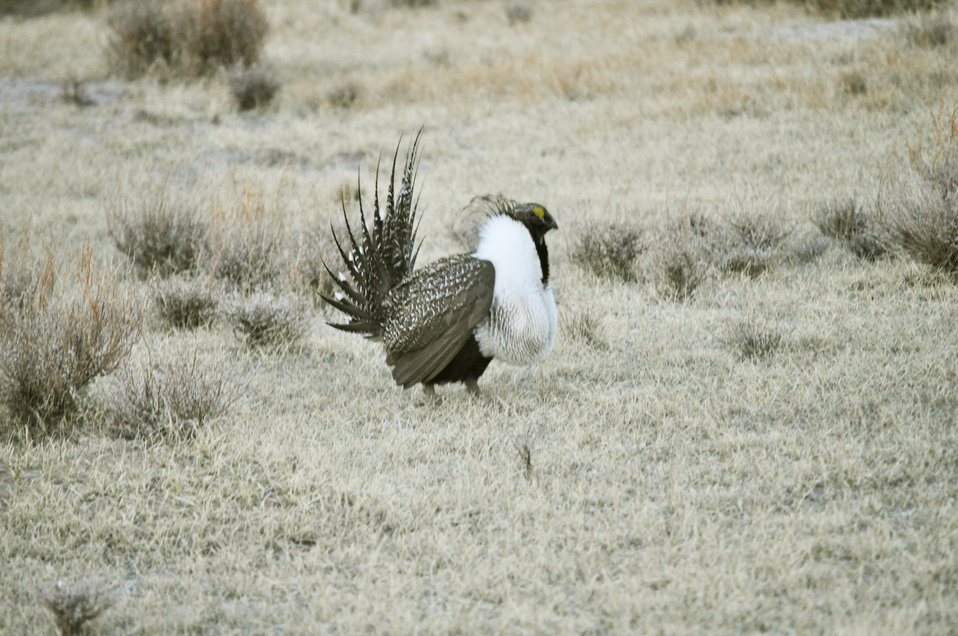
Male greater sage-grouse struts to attract females at a lek (breeding or dancing ground) near Bodie, California in April.